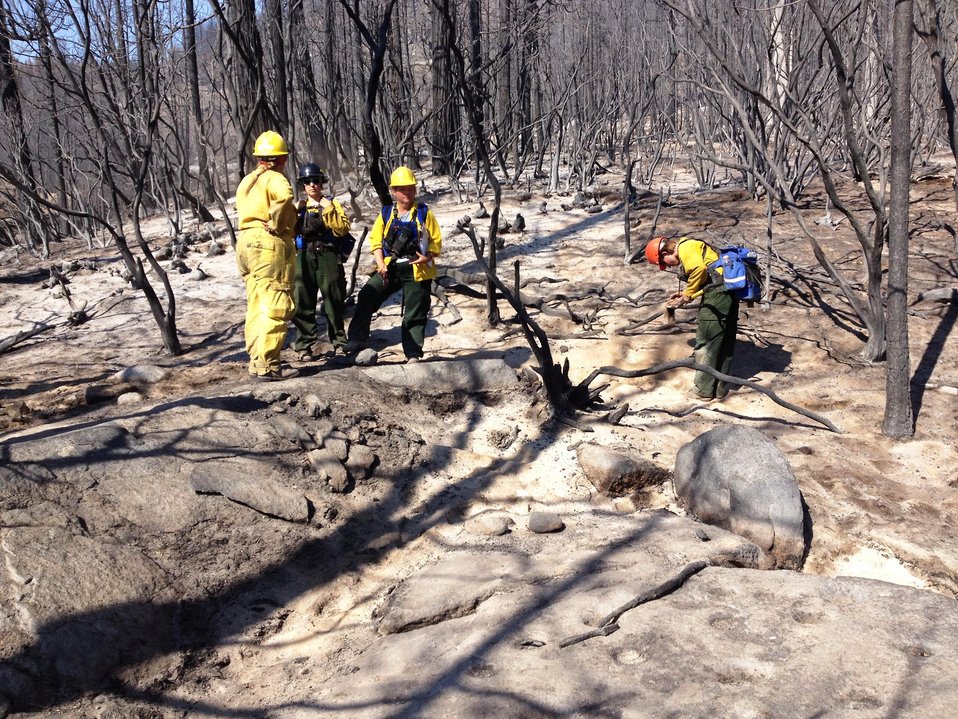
Burned Area Emergency Response (BAER) archeologists and soil scientists assess burned area at Rim Fire. . BAER teams start work even before the fire is completely extinguished at the Rim Fire. BAER is a rapid assessment of burned watersheds by a BAER team to identify imminent post-wildfire threats to human life and safety property and critical natural or cultural resources on National Forest System lands and take immediate actions to implement emergency stabilization measures before the first major storms. Fires result in loss of vegetation exposure of soil to erosion and increased water runoff that may lead to flooding increased sediment debris flows and damage to critical natural and cultural resources. BAER team members implement seeding and mulching installation to prevent erosion, erect temporary water run-off control structures that will protect recovering areas, and installation of warning signs, replace safety related facilities, remove safety hazards, prevent permanent loss of habitat for threatened and endangered species, and prevent the spread of noxious weeds and protect critical cultural resources. The Rim Fire in the Stanislaus National Forest near in California began on Aug. 17, 2013 and is under investigation. The fire has consumed approximately 256,169 acres and is 84% contained.